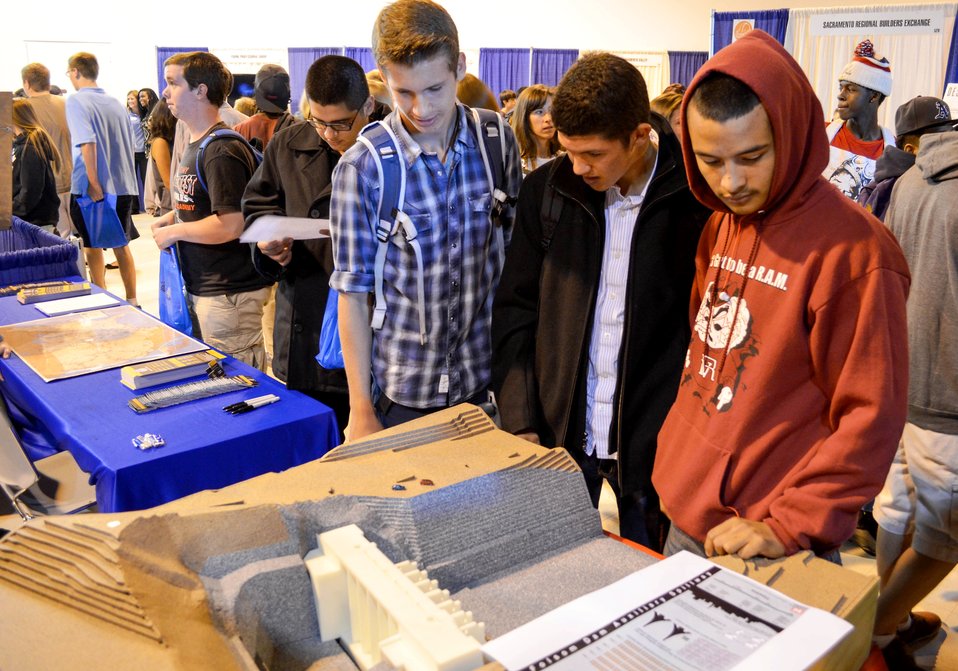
Corps talks jobs at GPS Career Fair

High school students view a model of the Folsom Dam auxiliary spillway, part of the U.S. Army Corps of Engineers Sacramento District display at the GPS Career Fair at Cal Expo in Sacramento, Calif., Sept. 25, 2013. The district hosted a booth at the event to encourage kids to pursue careers in science, technology, engineering and mathematics, or STEM.